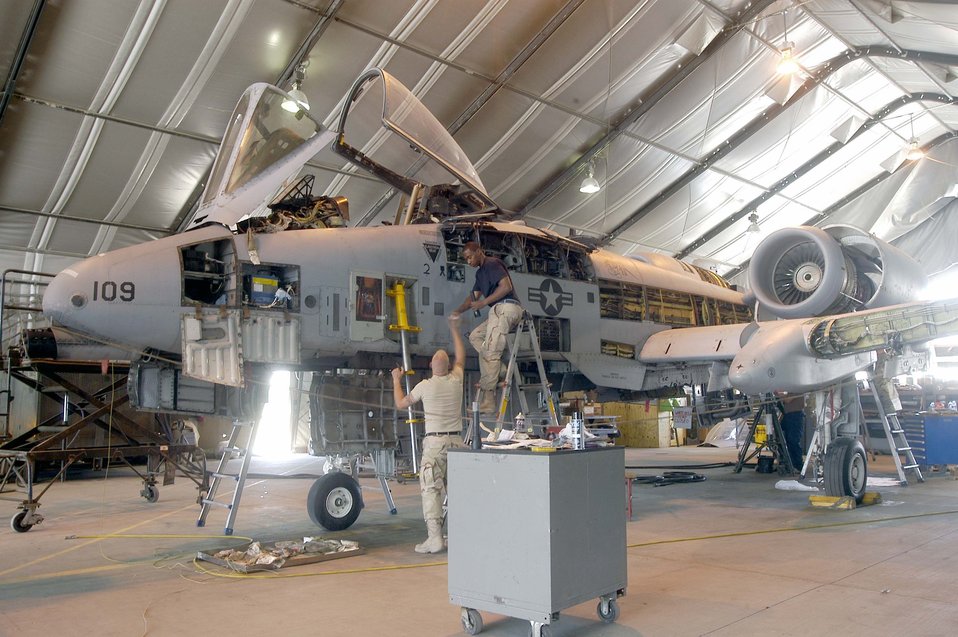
Keep the Thunderbolts flying

Staff Sgt. Shannon Hughes (left) hands Senior Airman Damon Johnson a tool as they work on an A-10 Thunderbolt II during its phase inspection at Bagram Air Base, Afghanistan. The Airmen are deployed from Spangdahlem Air Base, Germany, in support of Operation Enduring Freedom. The 455th Expeditionary Maintenance Group is working on the airplanes around the clock, to ensure consistent ability to meet the demand for the airframe in theater.